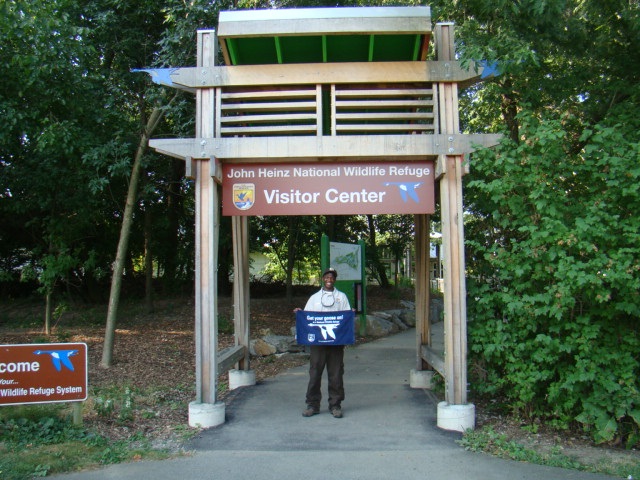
Get Your Goose On!

USFWS employee Tajuan Levy Gets His Goose On at John Heinz National Wildlife Refuge.